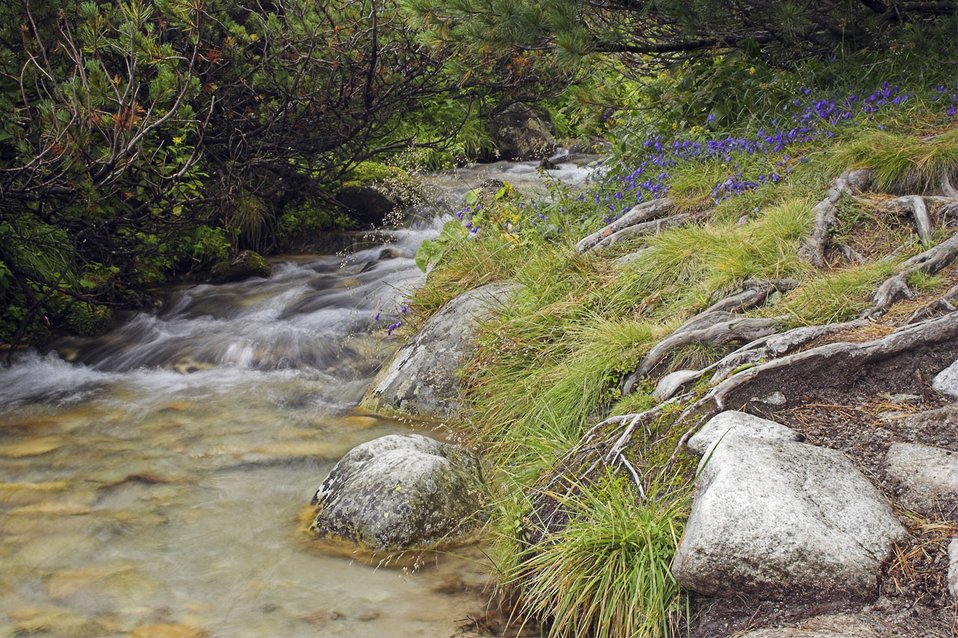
Stream in high tatras

Clean cold stream in high tatras in slovakia.